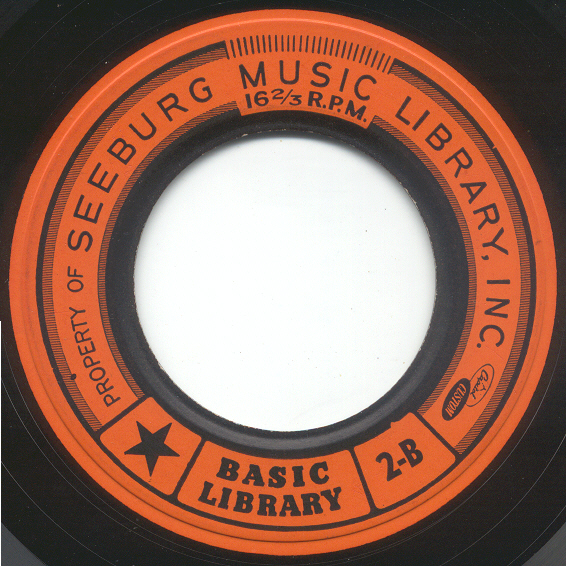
Label of a 1959 Seeburg 'Basic' Series 16 rpm record.